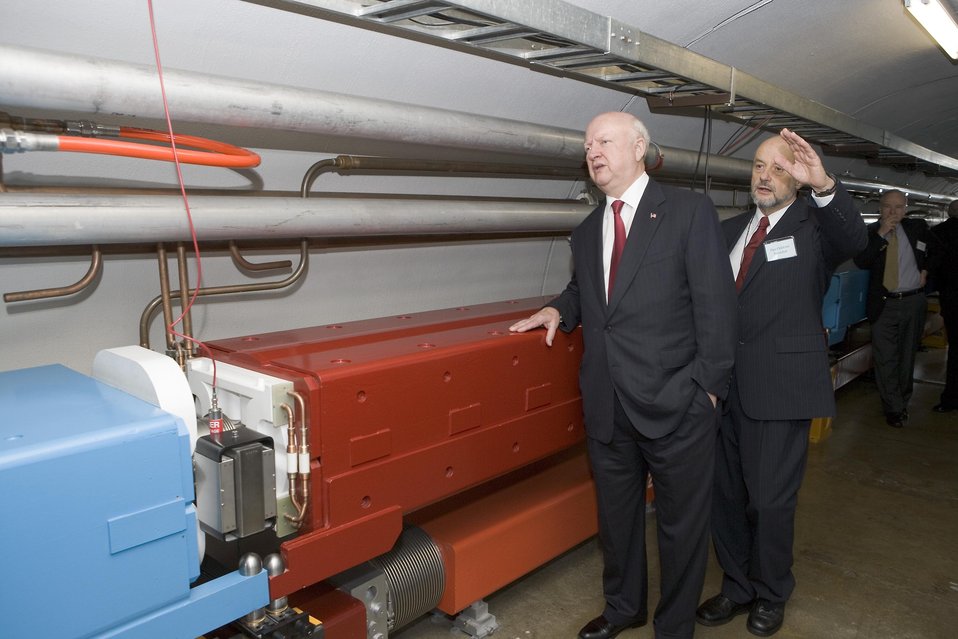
ENERGY SECRETARY SAMUEL BODMAN VISITS FERMI NATIONAL ACCELERATOR LABORATORY ON APRIL 7, 2006, SHOWN HERE WITH PIER ODDONE, DIRECTOR OF FERMILAB.

DURING A VISIT TO FERMILAB, SECRETARY BODMAN TOUR THE COLLIDER DETECTOR ASSEMBLY HALL AND THE INDUSTRIAL BUILDING WERE RESEARCHERS ARE DOING WORK FOR THE LARGE HADRON COLLIDER AND HEARD A PRESENTATION ON THE CMS DETECTOR.